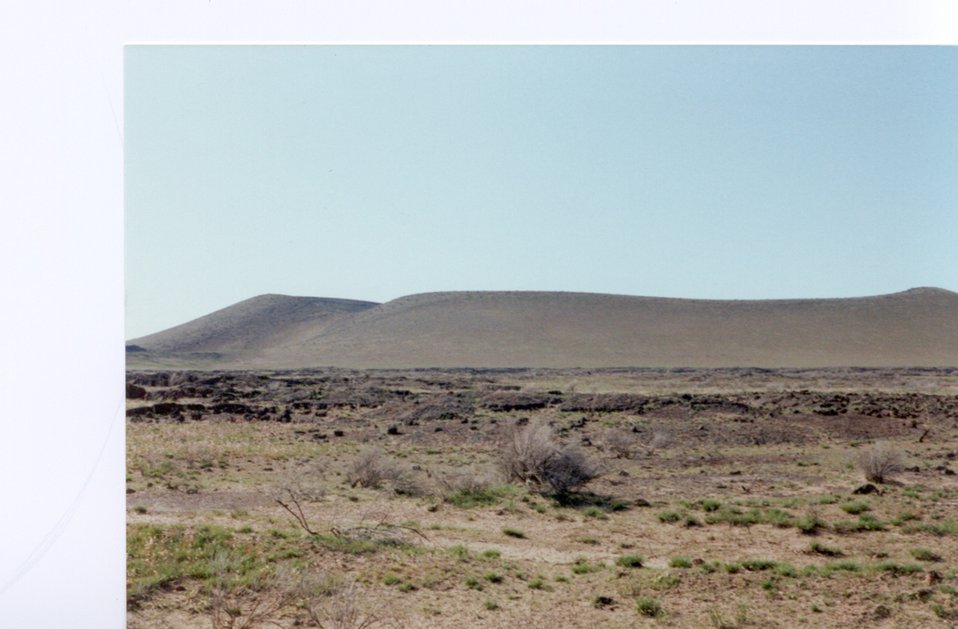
Sand Butte from South Bike Trip Craters of the Moon Shoshone Field Office USRD Upper Snake River District